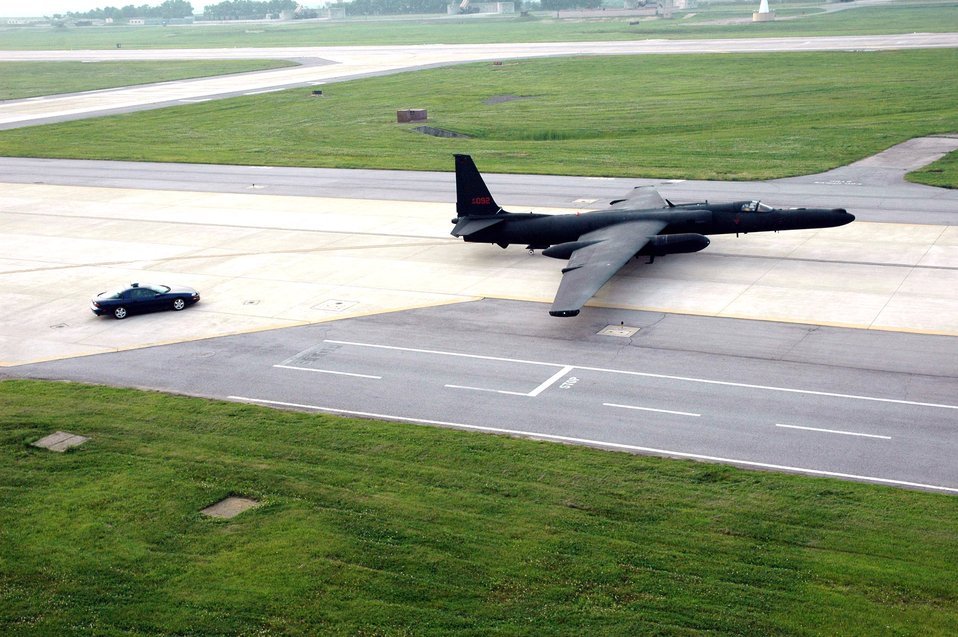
U-2s boast new, improved cockpit

The improved U-2S Dragon Lady, Block 20, aircraft taxis to the runway at Osan Air Base, South Korea, followed by a high-performance chase car. Osan AB was the last forward operating location to receive the new Block 20 aircraft.